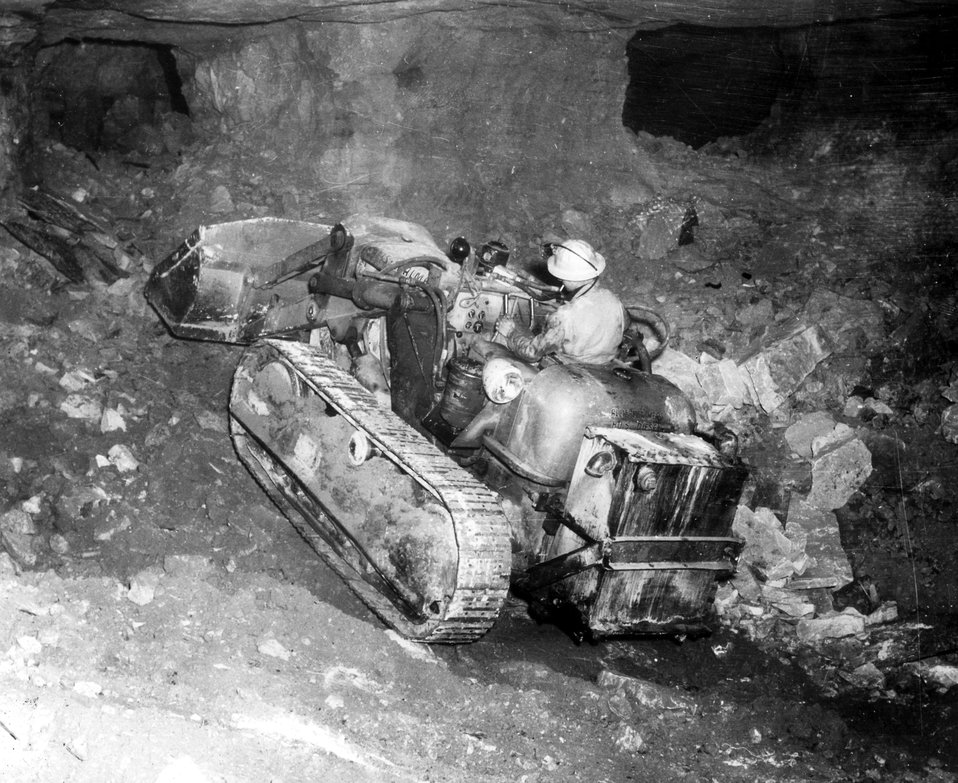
Front end type tractor loader in large open slope of uranium mine. This loader used to load diesel dump trucks underground. c. 1957